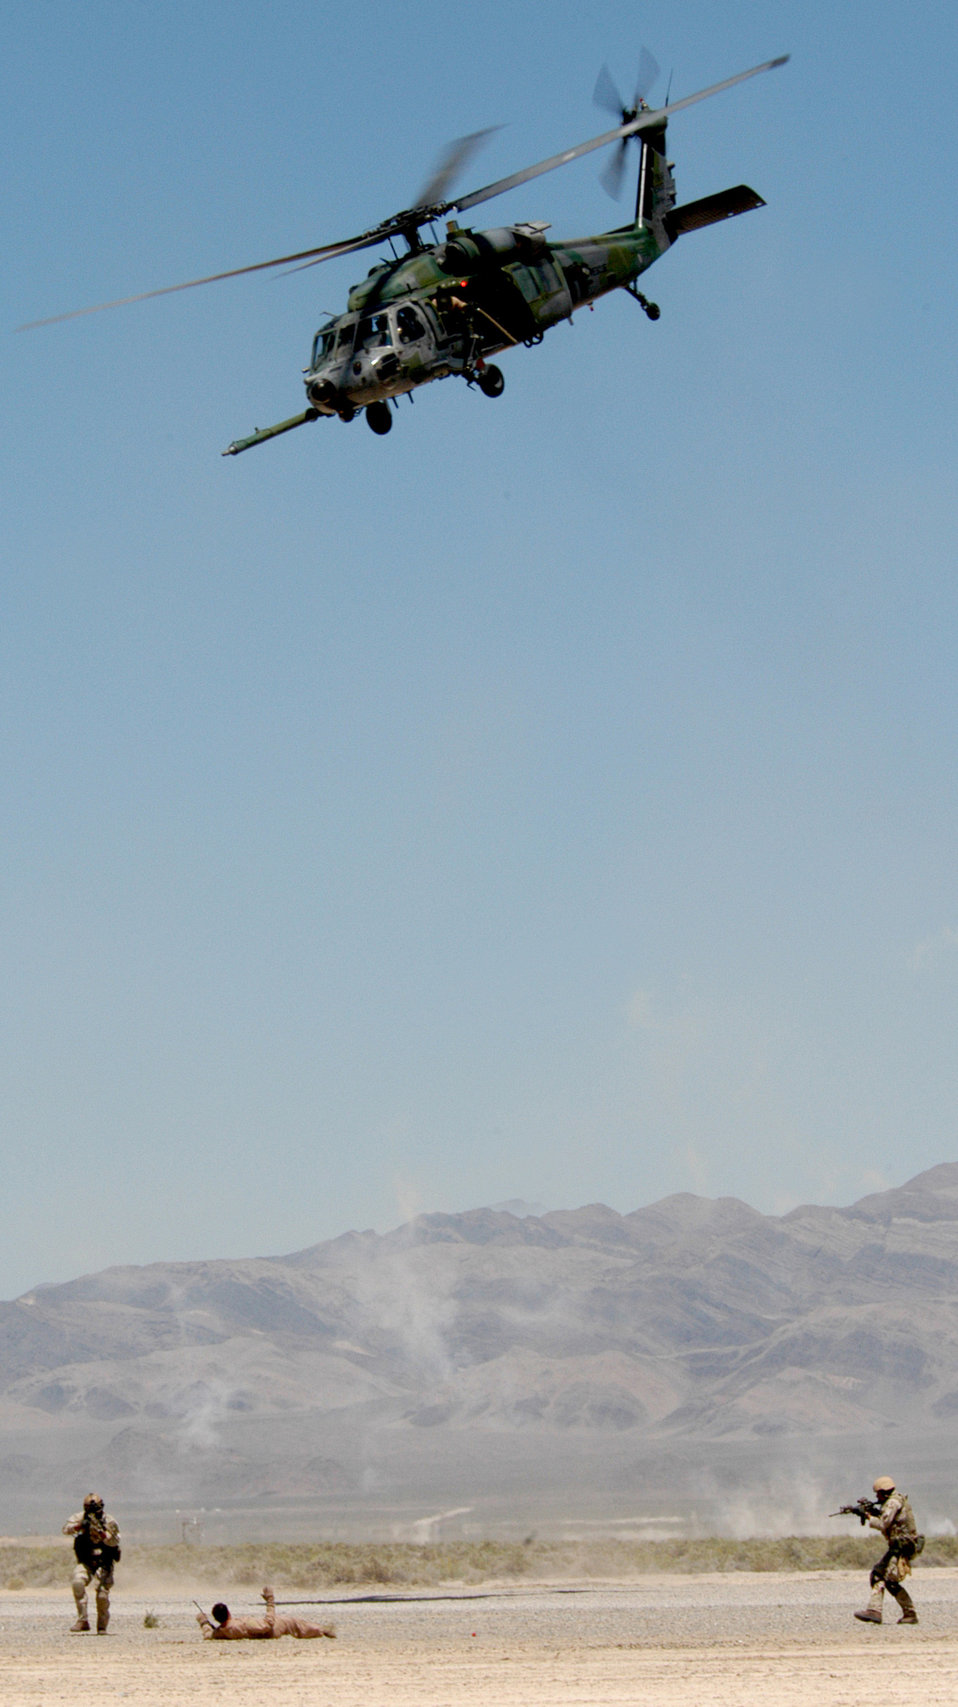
Downed on the range

NELLIS AIR FORCE BASE, Nev. -- An HH-60G Pave Hawk hovers as pararescuemen from the 58th Rescue Squadron move in to retrieve a downed pilot during a firepower demonstration on the bombing range here May 12.